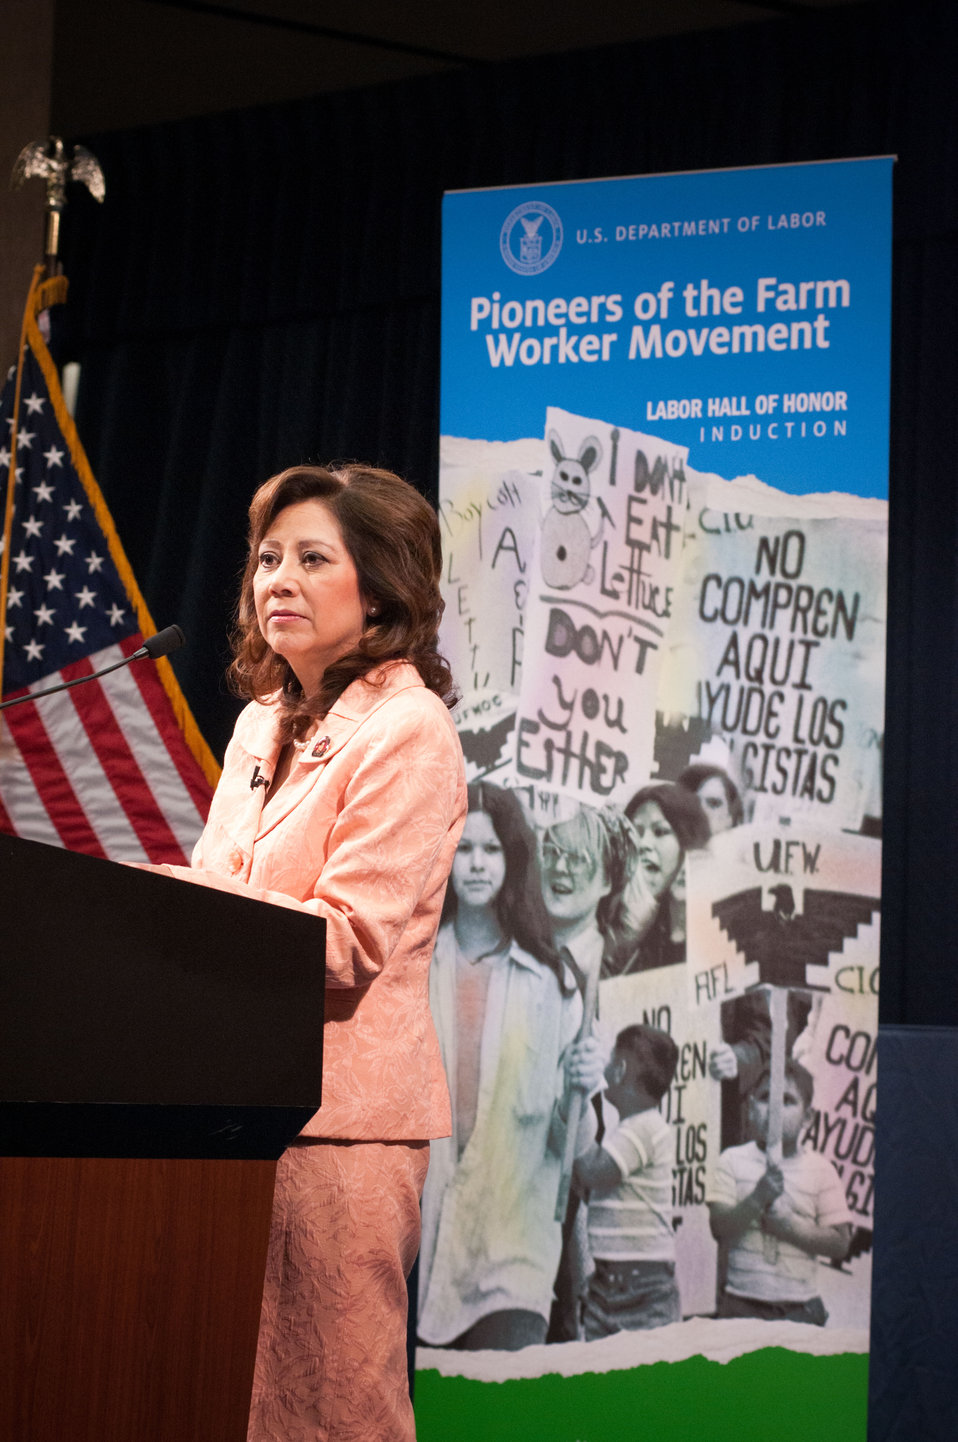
Labor Secretary Hilda Solis spoke of the diligence, dedication and effort by Cesar Chavez, a Mexican-American labor leader who used non-violent methods to fight for the rights of migrant farm workers in the southwestern United States. Chavez founded the Cesar Chavez Foundation, a group that advocates for the rights of farm workers, acting to increase wages and improve the working conditions and safety of farm workers during the dedication of the Cesar E. Chavez Memorial Auditorium at the United States Department of Labor in Washington, D.C., Monday, March 26, 2012.